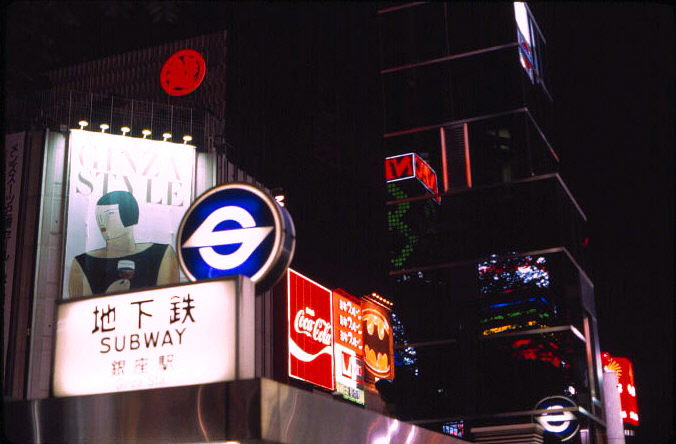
Signs above entrance to Tokyo subway at night.